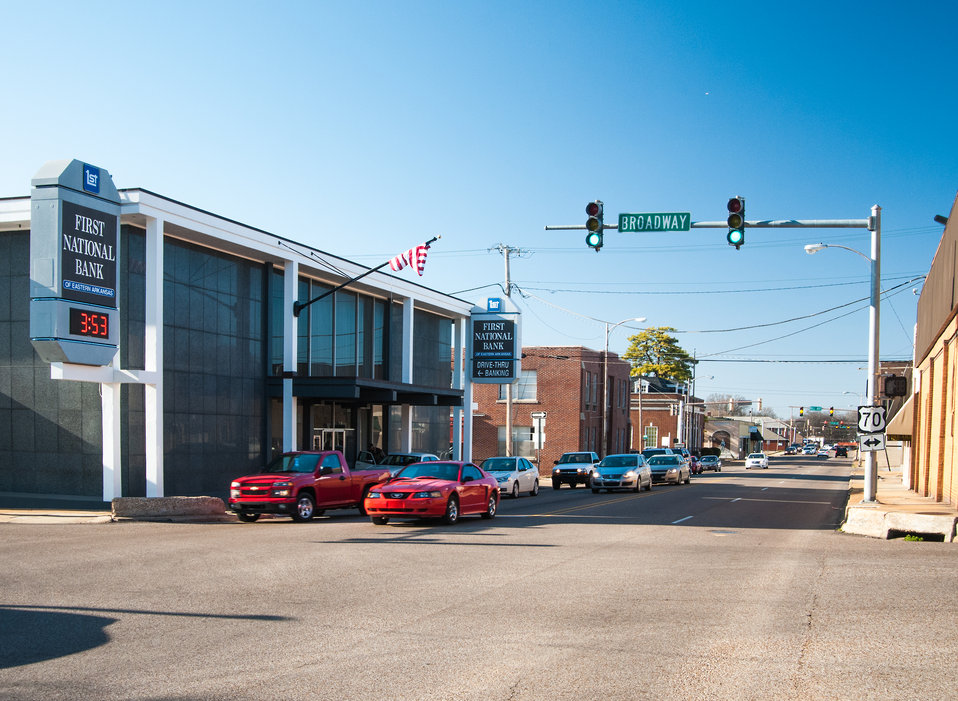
Traffic flows through downtown Forest City, AR on Mar. 5, 2013. The East Arkansas Enterprise Community, Inc. in Forrest City, AR is one of 42 community-based organizations located in high poverty areas in the U.S. to benefit from the Arkansas Delta Seeds of Change (ADSOC) Initiative. The U.S. Department of Agriculture (USDA) in partnership with Heifer International (an International organization whose mission is to work with communities to end hunger and poverty and care for the Earth) and various for-profit and non-profit organizations have put in motion the “Seeds of Change Implementation Plan” to use sustainable agriculture to build food systems in the Arkansas Delta. The program has evolved into the ADSOC Initiative.